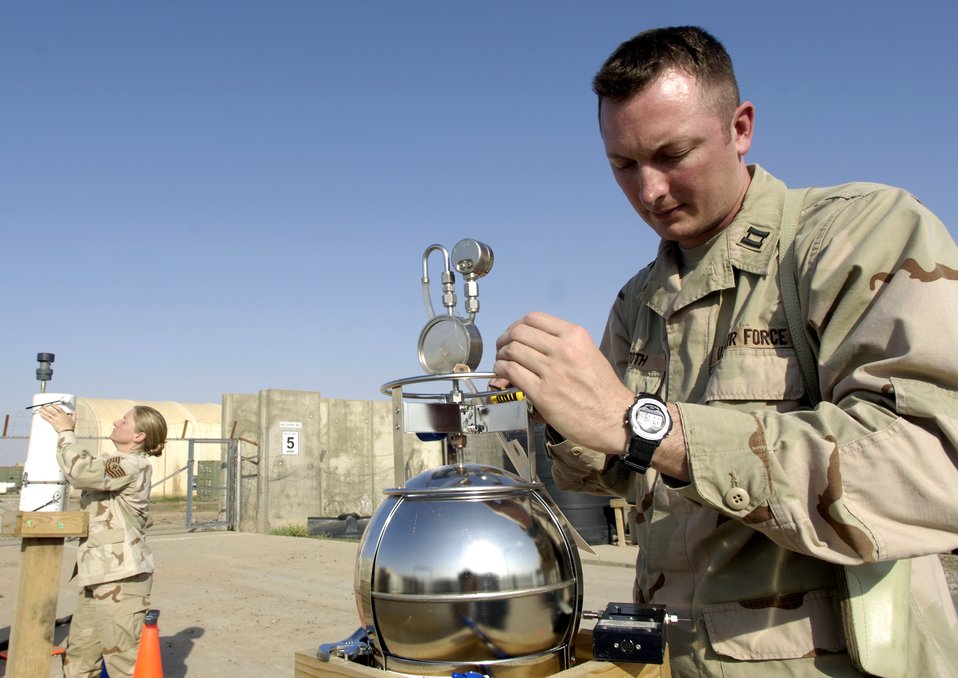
Bioenvironmental engineers keep Airmen safe

Tech. Sgt. Melissa Saraiva and Capt. Charles Toth check monitoring devices April 13 at Balad Air Base, Iraq, for common pesticides and other environmental hazardous chemicals in the air. Captain Toth is the bioenvironmental engineer flight commander and Sergeant Saraiva is the flight NCOIC. Bioenvironmental engineers perform environmental, occupational and radiological surveillance in order to protect and maintain a healthy work force, and they serve as mission enhancers during emergency management response operations.